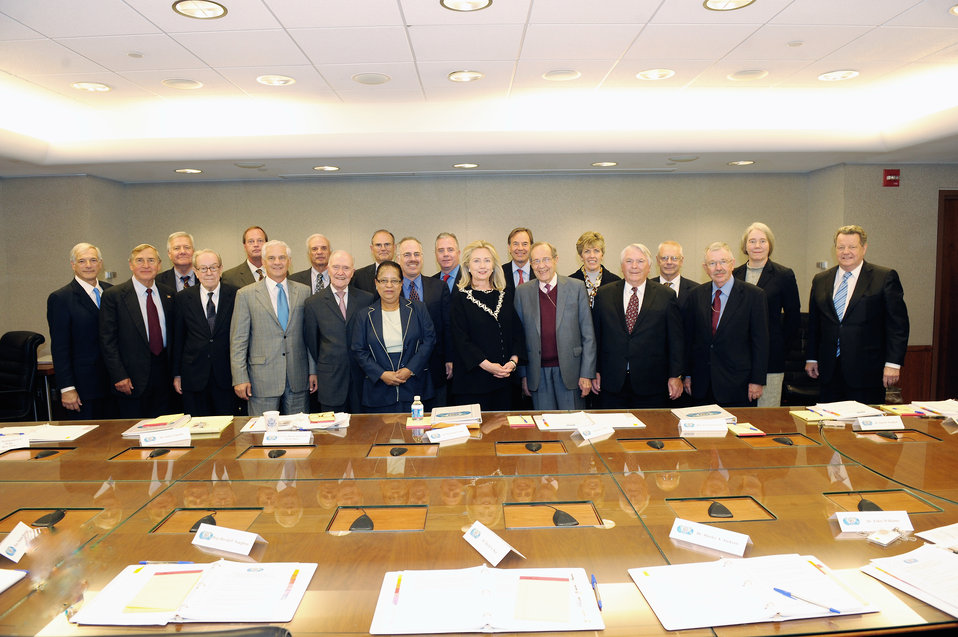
Secretary Clinton Meets With International Security Advisory Board

U.S. Secretary of State Hillary Rodham Clinton meets with the U.S. Department of State’s International Security Advisory Board in Washington, D.C., on October 6, 2011. From left to righ aret: Ambassador Robert Gallucci, Dr. Graham Allison, Douglas Bereuter, Ambassador James Goodby, William Tobey, Joseph Cirincione, Dr. James Tegnelia, Lt. General Brent Scowcroft, General Montgomery Meigs, Dr. Shirley Ann Jackson, Dr. Raymond Jeanloz, Rep. Harold P. Naughton Jr, Secretary Clinton, Dr. Bruce Blair, Dr. William Perry, Dr. Joan B. Woodard, Robert Terry Everett, Walter Slocombe, Dr. David A. Kay, Dr. Ellen Williams, and Charles Curtis.